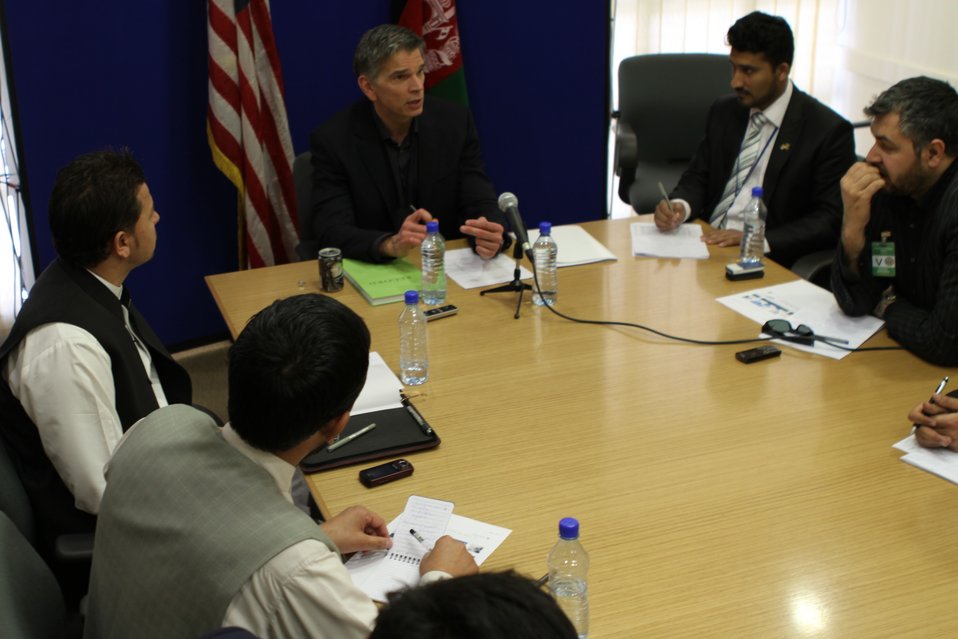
USAID Mission Director Earl Gast Conducts a Media Roundtable with Afghan Media, March 17, 2011